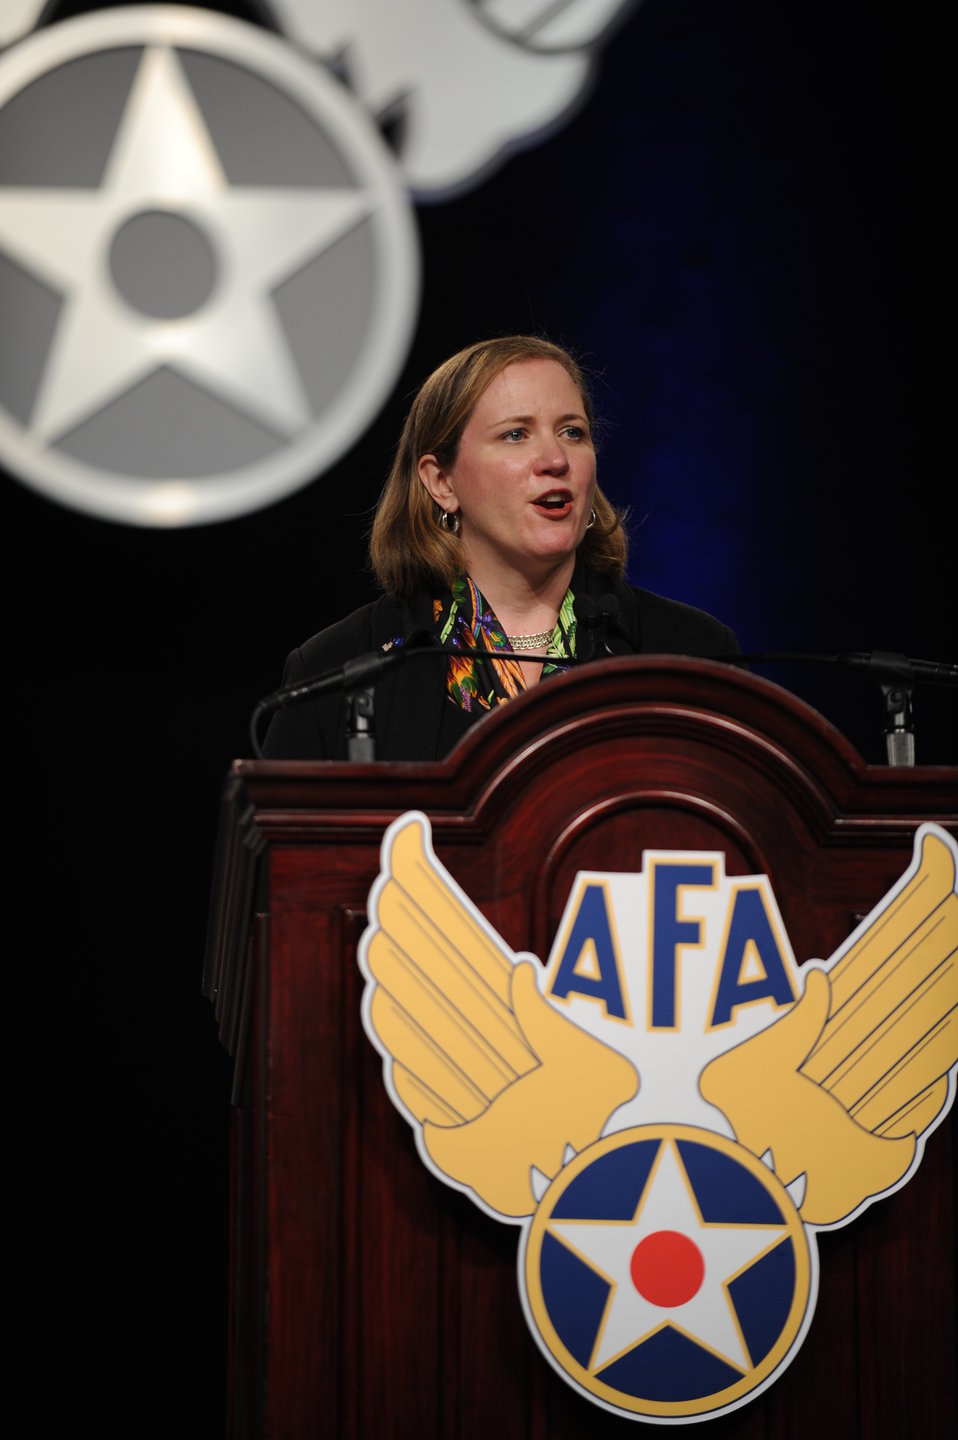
Air Force Under Secretary stresses innovation amidst rough fiscal waters

Under Secretary of the Air Force Erin Conaton addresses Airmen, interagency partners and industry leaders Sept. 20, 2011, about strategic opportunities and the need for innovation in the current fiscal environment during the Air Force Association's 2011 Air & Space Conference and Technology Exposition at National Harbor, Md.